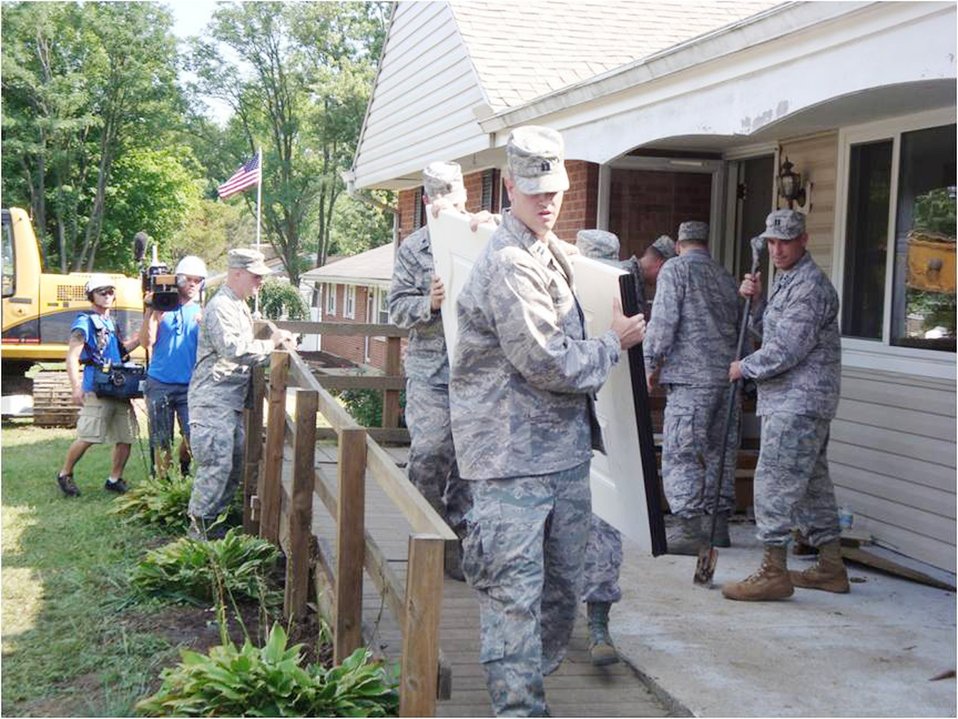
Air Force family's 'Extreme Makeover' to air on Nov. 8

Air Force volunteers carry out a door, as camera crews tape the demolition of James Terpenning's house Aug. 1, 2009, for an episode of 'Extreme Makeover: Home Edition.' About 25 Air Force military members and civilians volunteered a Saturday morning to help with the demolition of the Terpenning family home. The episode featuring the family's re-built house will air Nov. 8 on ABC at 8 p.m./7 p.m. Central time.